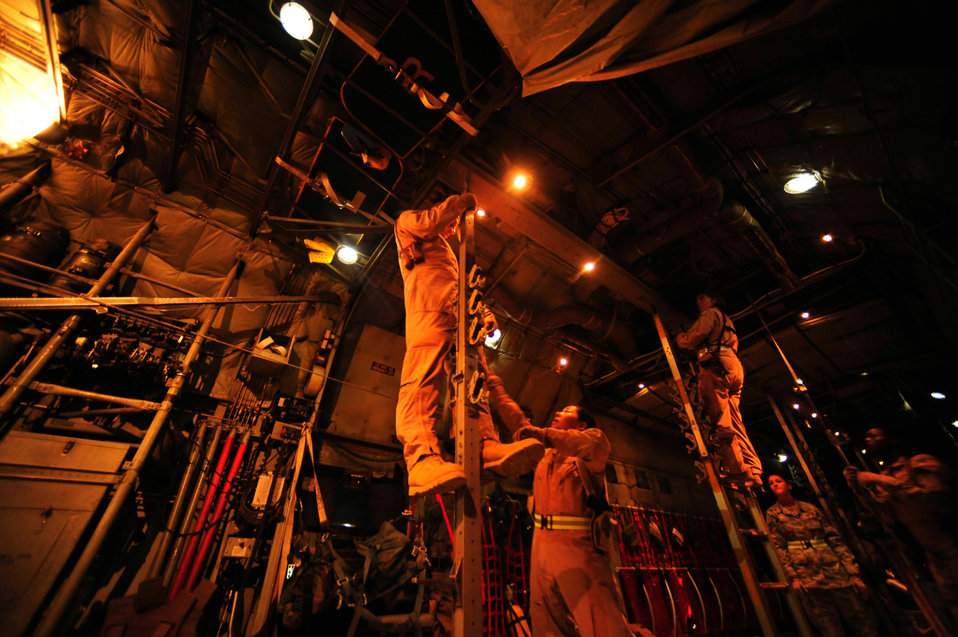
Medical crew

Crew members assigned to the 362nd Expeditionary Aeromedical Evacuation Flight configure a C-130 Hercules aircraft for an aeromedical evacuation mission during pre-flight inspections July 17, 2010, at Joint Base Balad, Iraq.